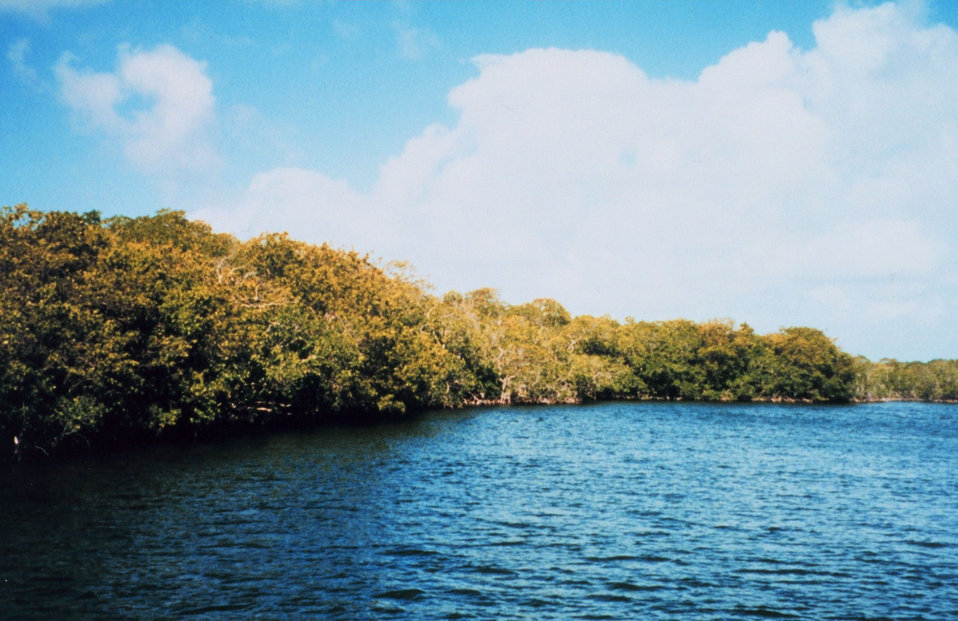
Typical red mangrove with prop roots - characteristic of high salinity area